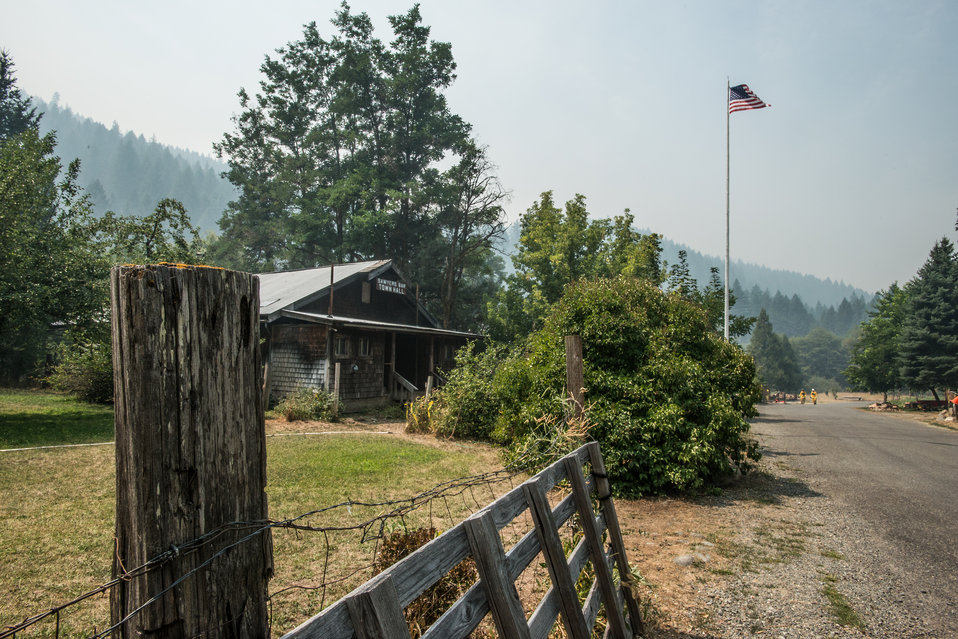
The Sawyer's Bar Town Hall sits amongst trees, slightly off the main street where the Fire Information Bulletin Board has the latest information about the Salmon River Complex Fire, not far from this location at Sawyers Bar, CA in the Klamath National Forest, Tuesday, Aug. 6, 2013. Fire fighters specializing both structural and wildland firefighting from Tahoe National Forest, Mt. Shasta-Trinity National Forest, South Yreka Fire Department, Dunsmuir-Castella Fire Department and others, have been called to the Salmon River Complex Fire, and conduct their structure-by-structure assessment of the urban intermix environment, at Sawyers Bar, CA in the Klamath National Forest, Tuesday, Aug. 6, 2013. The firefighters advise resident about fire prevention measures they are doing on their own as well as other measures they could take to prepare for fire. Actions such as moving away firewood, cutting and clearing plants next to their structures, and using garden hoses to soak structures and grounds all help in the event the main fire comes into their town.
There are two types structure environments in the realm of wildland firefighting.
This urban intermix structural protection environment is generally the more challenging, where structures have been built within a wildland area, isolated to some degree from other structures, but with no separation from wildland fuels (trees, brush and grass). This requires each structure to be assessed on a case-by-case basis. Fire protection measures will be tailored to each situation; defending these structures require a more complex solution, more firefighters, equipment and resources per structure.